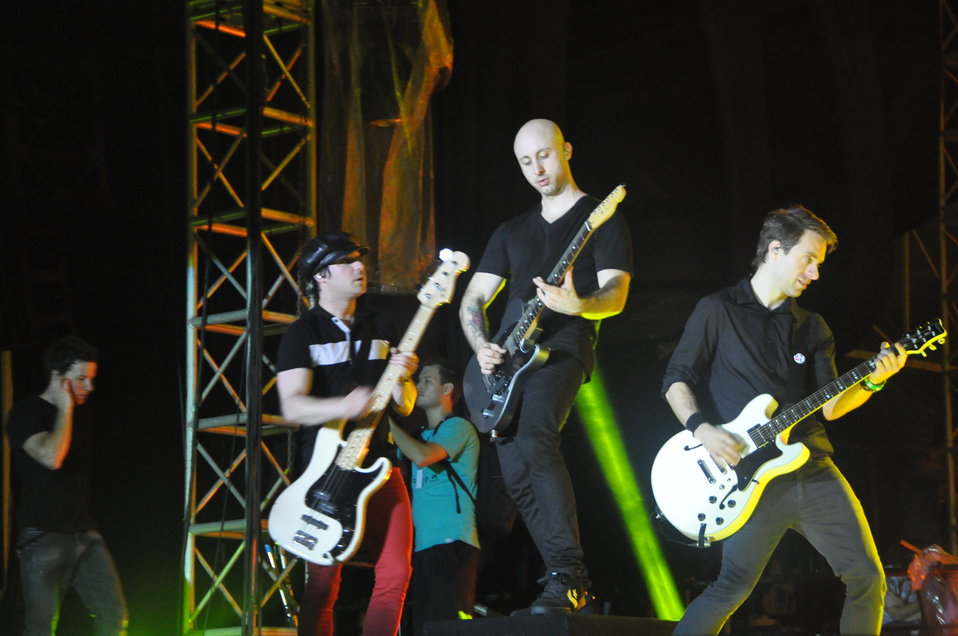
USAID co-sponors MTV EXIT concert in Hanoi against human trafficking

USAID co-sponsors MTV EXIT concert, campaign against human trafficking